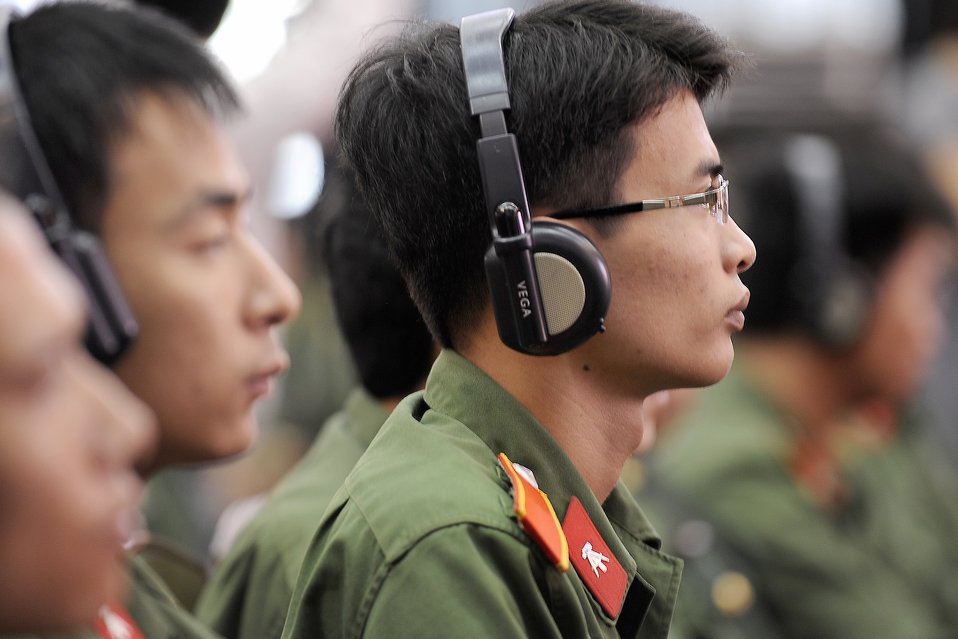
Secretary Gates seeks expansion of U.S.-Vietnamese cooperation

Vietnamese military members listen to Defense Secretary Robert M. Gates as he speaks Oct. 11, 2010, at Vietnam National University in Hanoi, Vietnam.